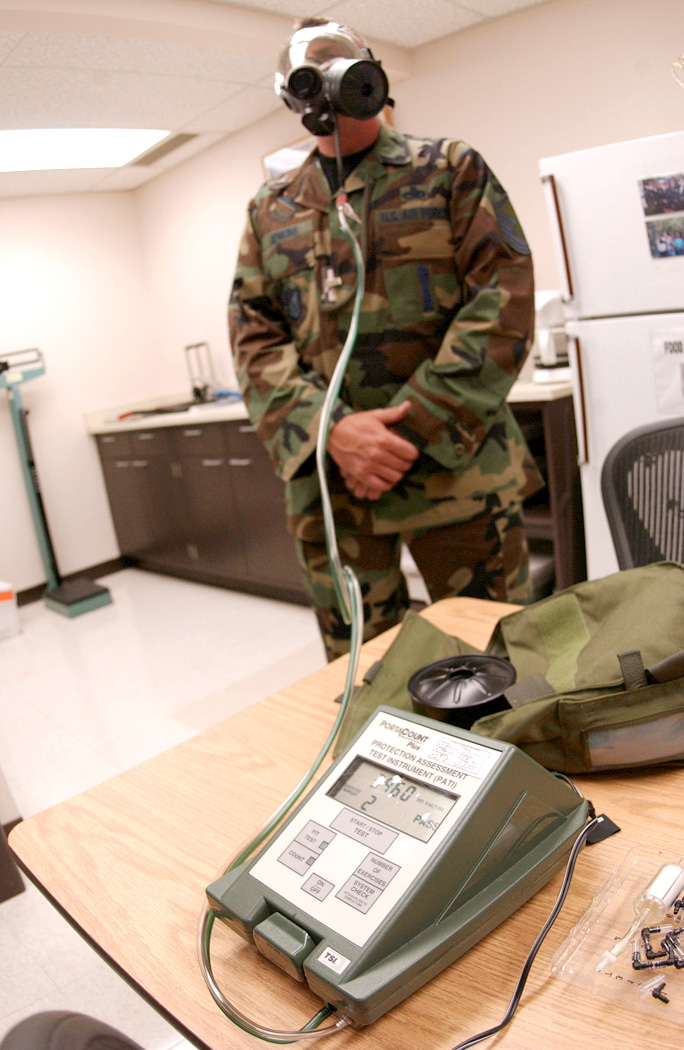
Getting fit

EIELSON AIR FORCE BASE, Alaska -- Master Sgt. Chuck Jenkins stands hooked up to a machine during a gas mask fit test here. The test analyzes air particles in the mask versus air particles outside the mask to ensure there are no leaks and the mask fits properly. Sergeant Jenkins is assigned to the 354th Maintenance Squadron.